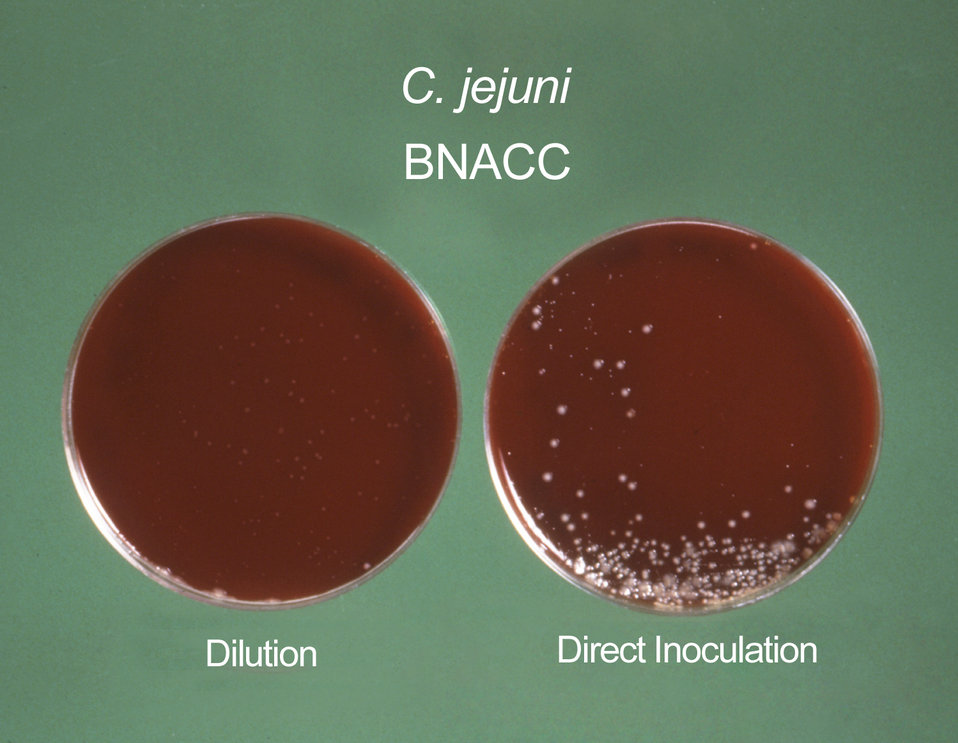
These Campylobacter fetus (C. fetus ss. jejuni) cultures were grown on Skirrow's and Butzler's medium.